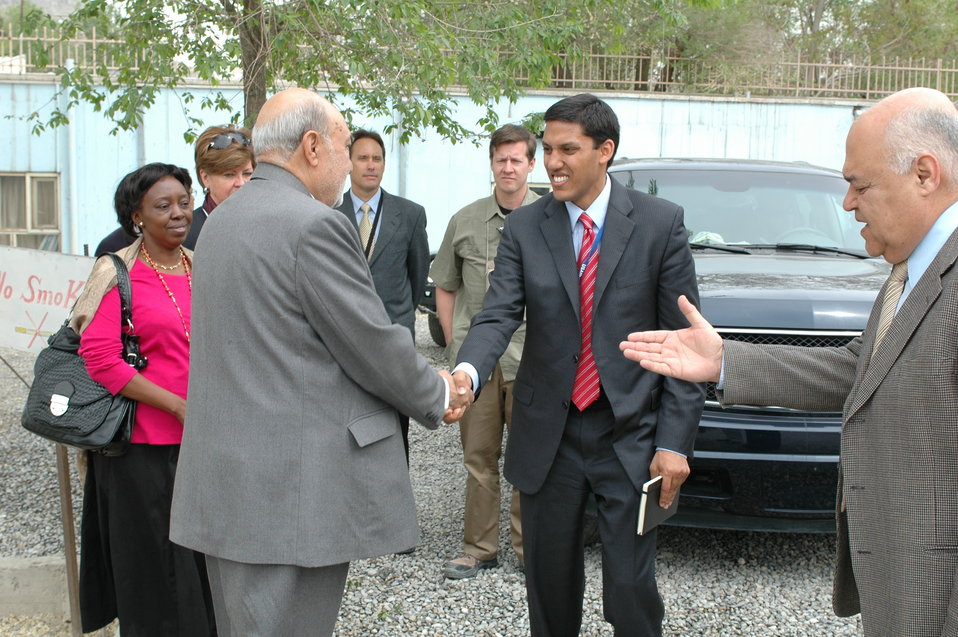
Dr Shah Visits Votech in Kabul